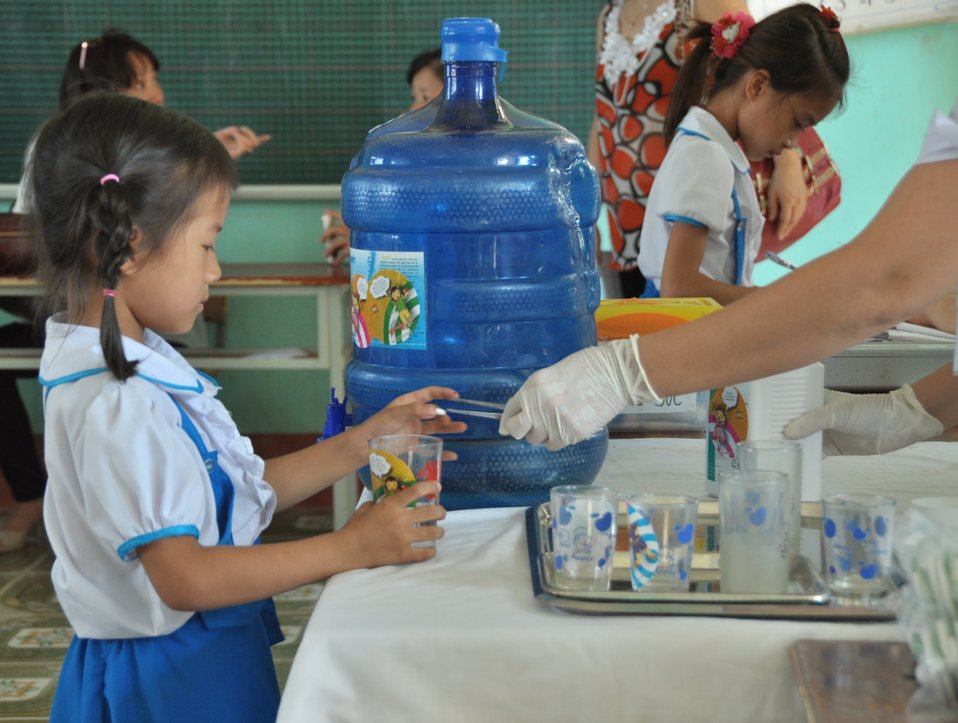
USAID supports deworming education and medication distribution in Bac Giang Province

May 20, 2013